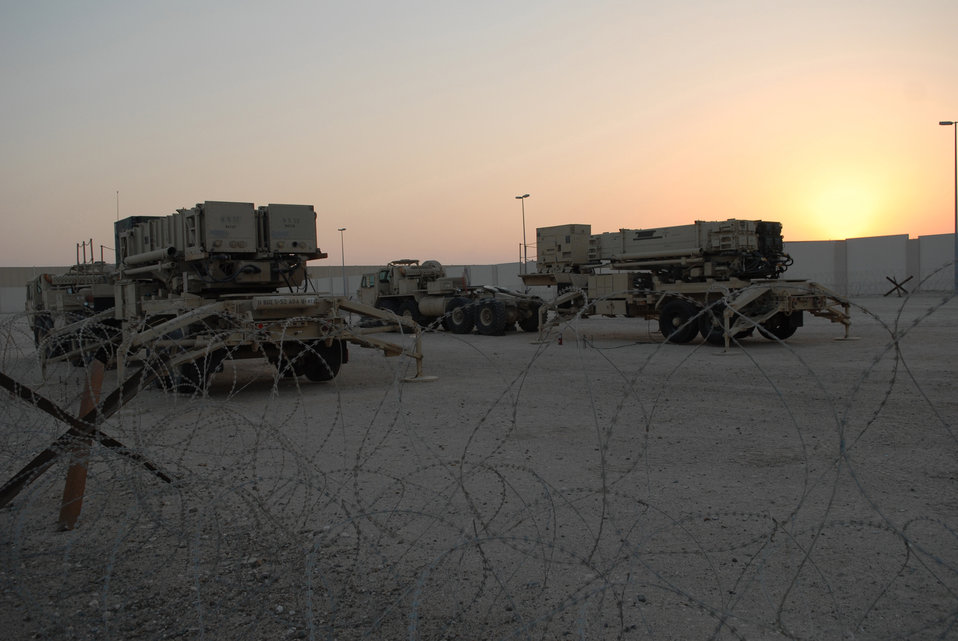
Airmen prep for Patriot's debut at Southwest Asian base

Two Patriot PAC 3 launchers stand ready for their new mission Jan. 2 at an air base in Southwest Asia. More than a dozen Soldiers deployed to the Air Force base to prepare the Patriot equipment before the arrival of the main body from 5-52 Air Defense Artillery Battalion from Fort Bliss, Texas.